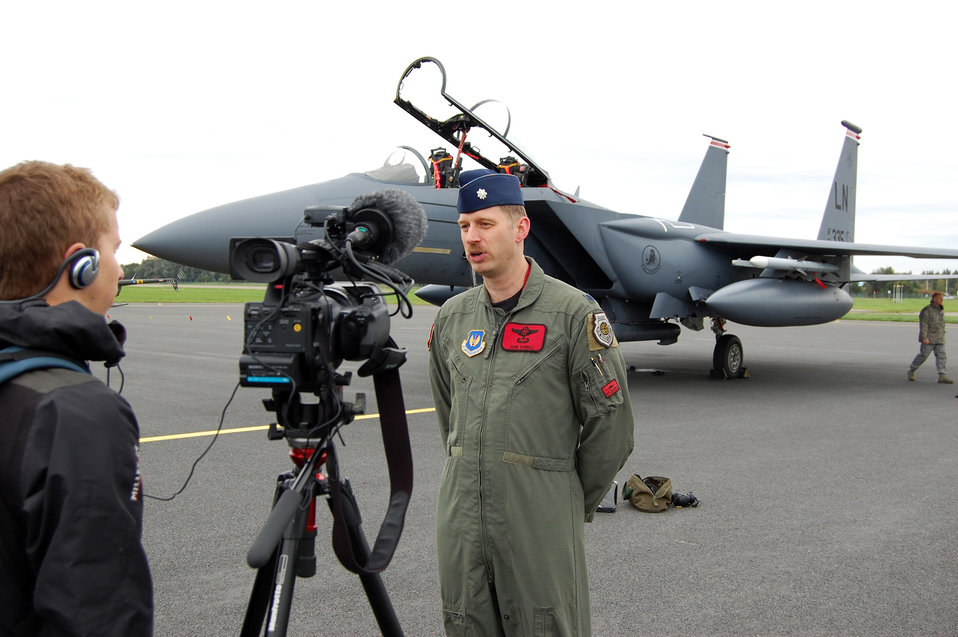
Lakenheath aircrews train with Estonian forward air controllers

Lt. Col. John Bunnell is interviewed by a NATO reporter Sept. 15, 2009 at Tallinn International Airport, Estonia. Colonel Bunnell is the 494th Fighter Squadron commander from Royal Air Force Lakenheath, England.